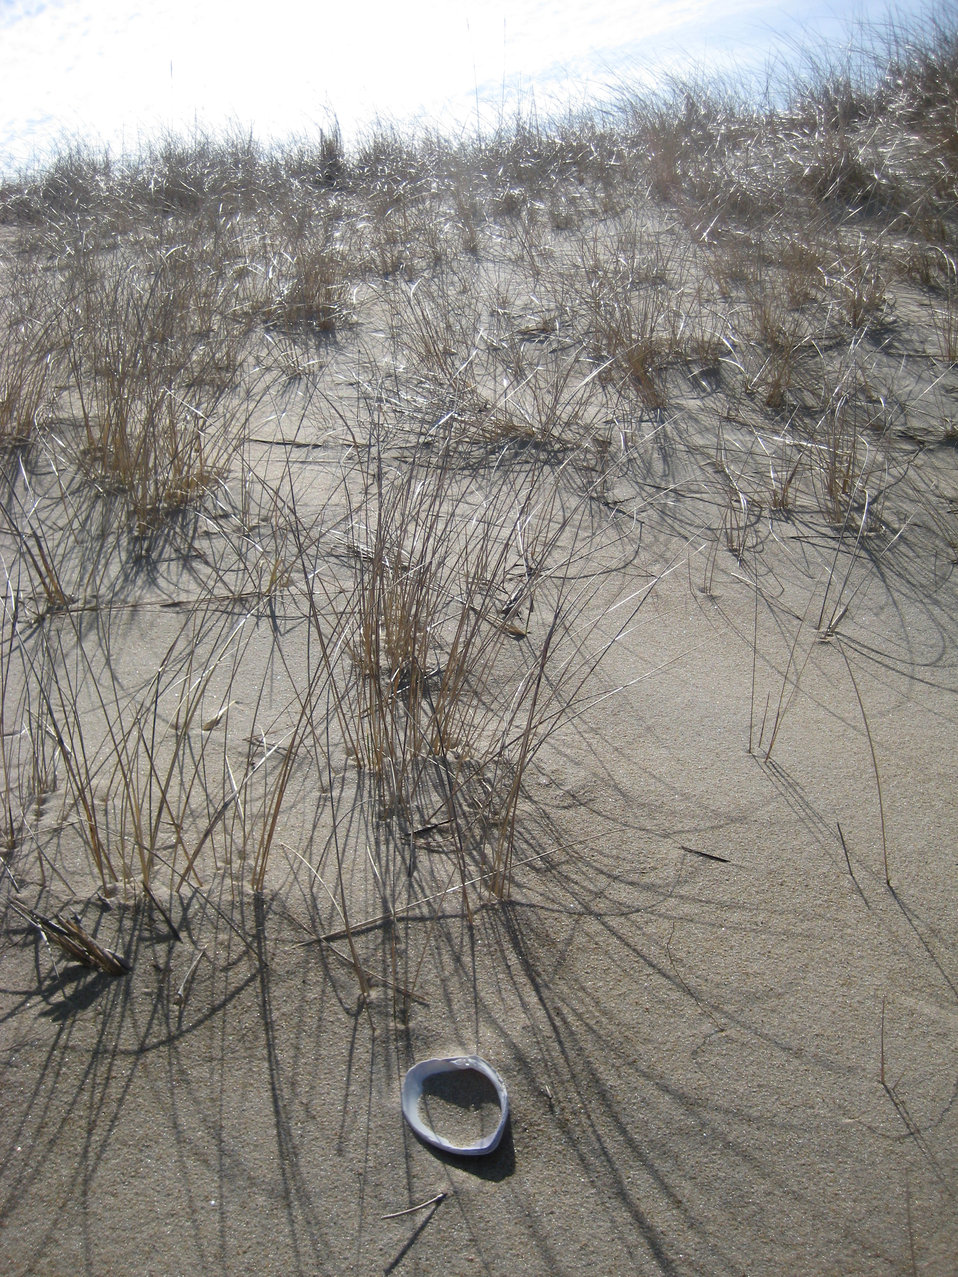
Buzzards Bay Beach

Buzzards Bay watershed in Massachusetts. Supported by the North American Wetlands Conservation Act and a coalition of conservation partners.